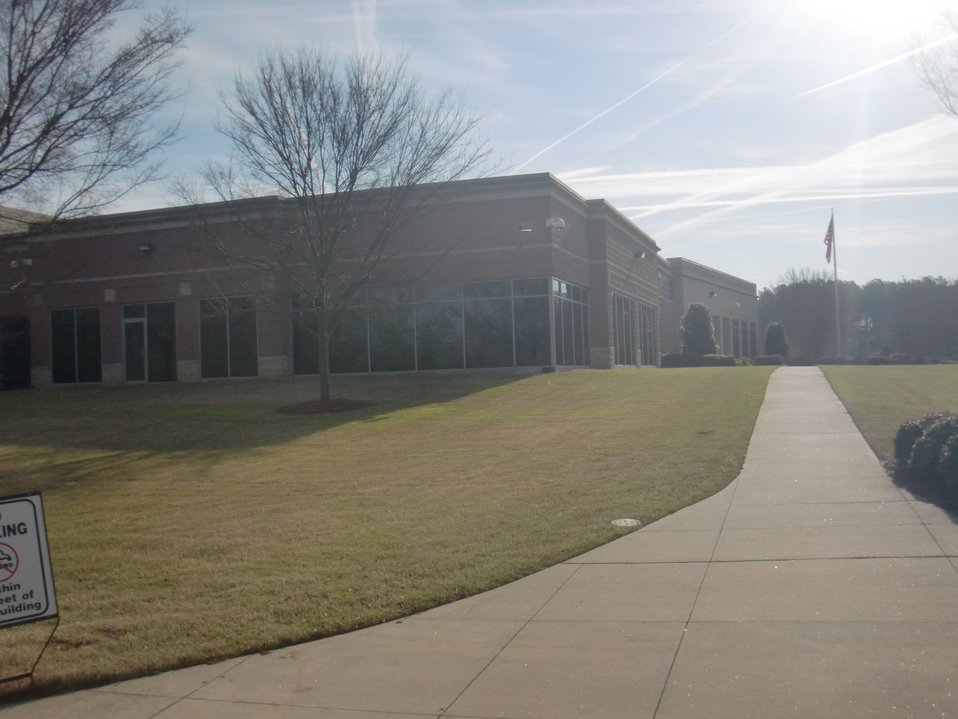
External shot of building; Location: Atlanta Federal Records Center, Ellenwood, GA